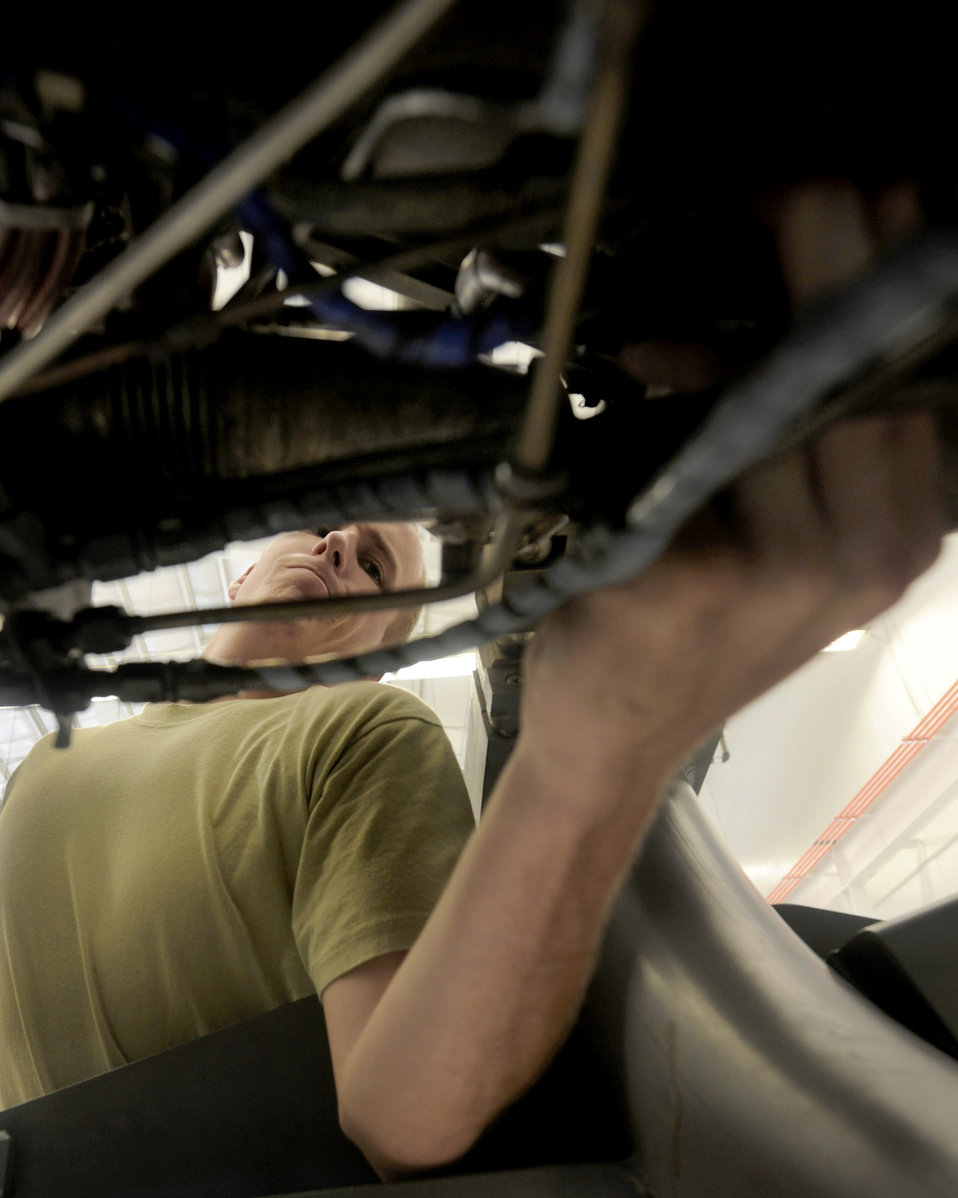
Engine mechanics cross train

Airman 1st Class Kevin Horner removes bolts from a TF-34 engine during routine maintenance July 22, 2010, at Moody Air Force Base, Ga. Once members achieve their 5 skill-level certification, they will be able to start their task qualifications toward the other two engines from the HC-130P/N King and HH-60G Pave Hawk. Airman Horner is a 23rd Component Maintenance Squadron aerospace propulsion apprentice.